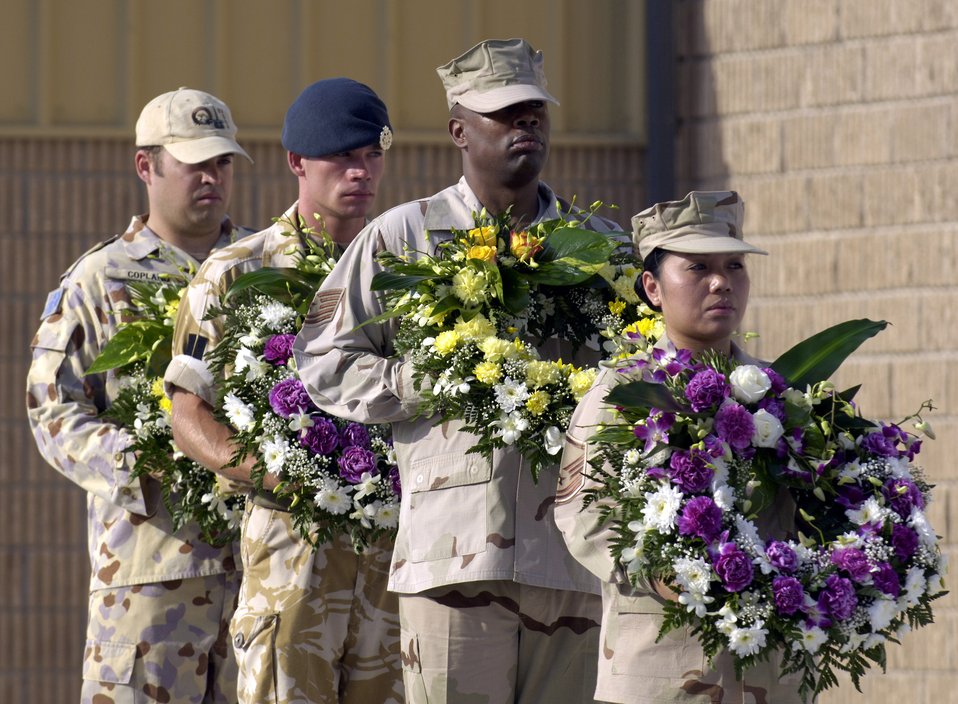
Southwest Asia memorial

Master Sgt. Juliet Alonso and a multinational wreath bearing team prepare to lay wreaths as coalition partners gathered May 28 at this deployed location in Southwest Asia to participate in a Memorial Day ceremony. Sergeant Alonso is a services specialist deployed from Dobbins Air Reserve Base, Ga.